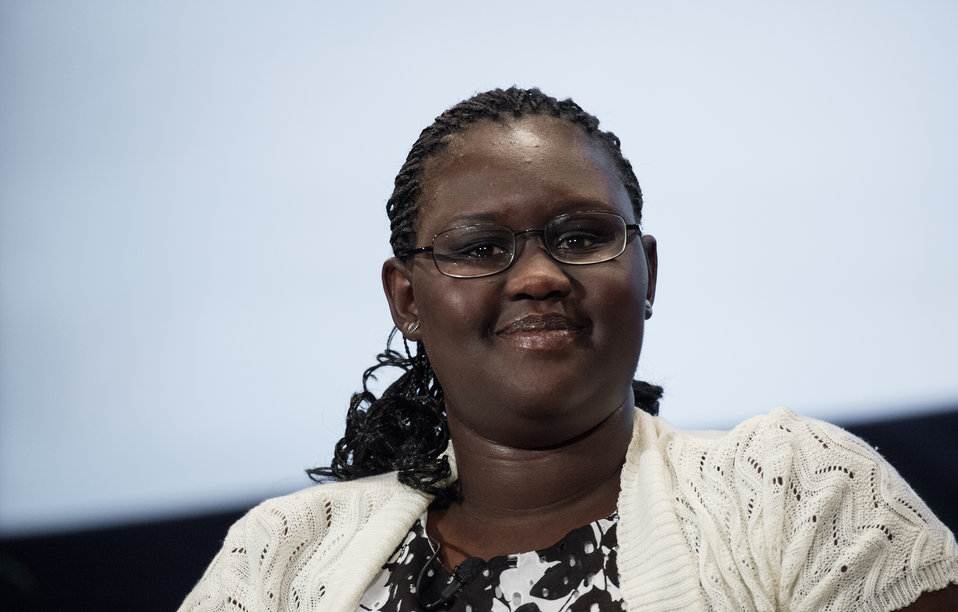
Binghamton, NY high school student Nosa Akol, participates in the discussion panel titled 'I am Dr. Borlaug's Vision - I Can Make a Difference'; during the Borlaug Symposium commemorating the late Dr. Norman E. Borlaug's 100th Birthday hosted by the U. S. Department of Agriculture (USDA) in the Jefferson Auditorium of USDA in Washington, D.C. on Tuesday, Mar. 25, 2014. The symposium highlighted current efforts addressing global hunger.